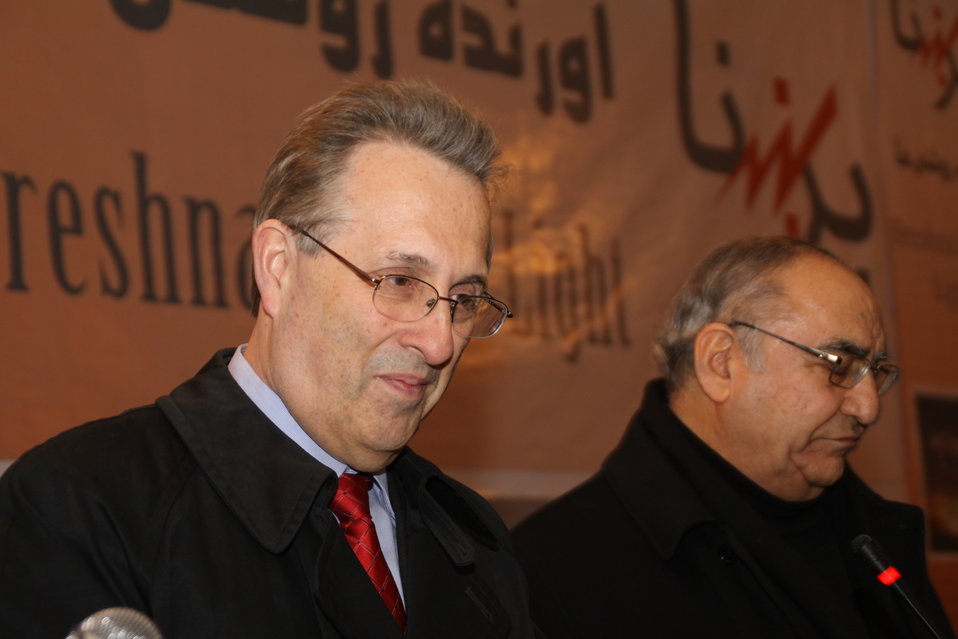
U.S. Ambassador E. Anthony Wayne and Dr. Shams